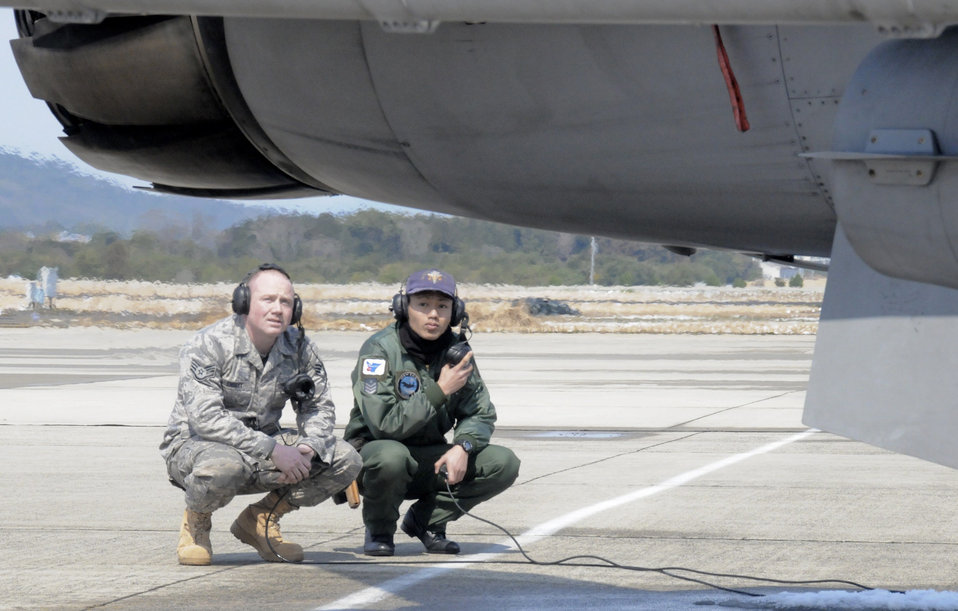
ATR exercise

Staff Sgt. Robert Ensley waits to conduct a pre-flight inspection with Japan Air Self Defense Force crewchief Senior Airman Naoki Yamashita March 11, 2010, at Tsuiki Air Base, Japan. Sergeant Ensley is a 35th Aircraft Maintenance Squadron crewchief.